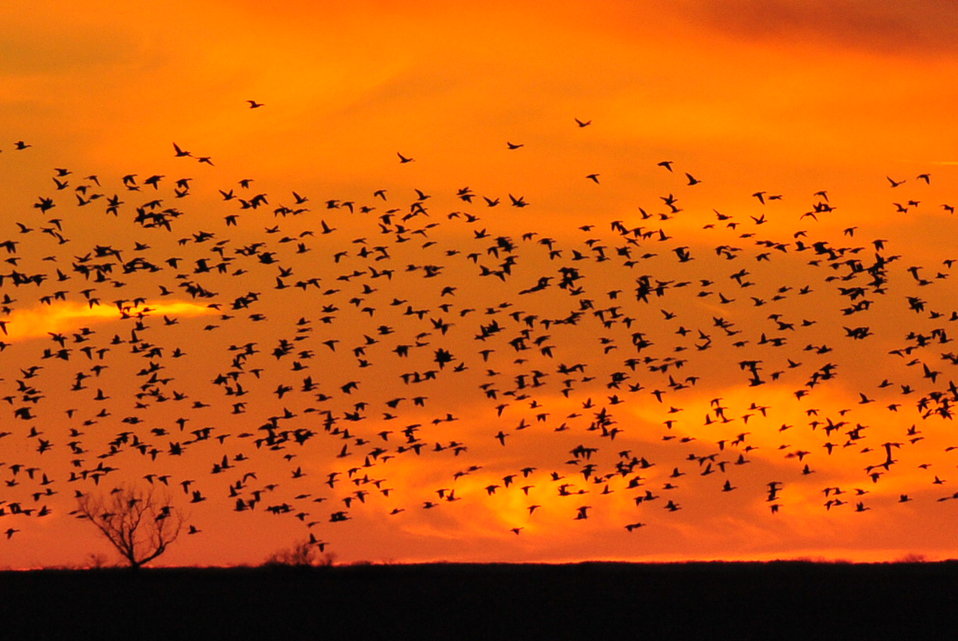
Mallards at Sunset Sand Lake NWR 01